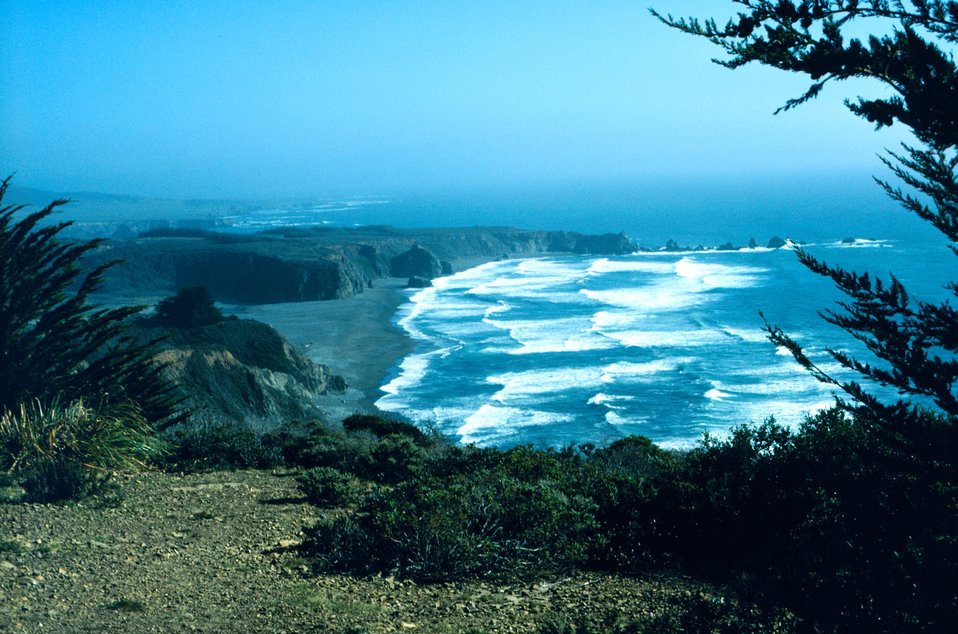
Probably northern California or southern Oregon